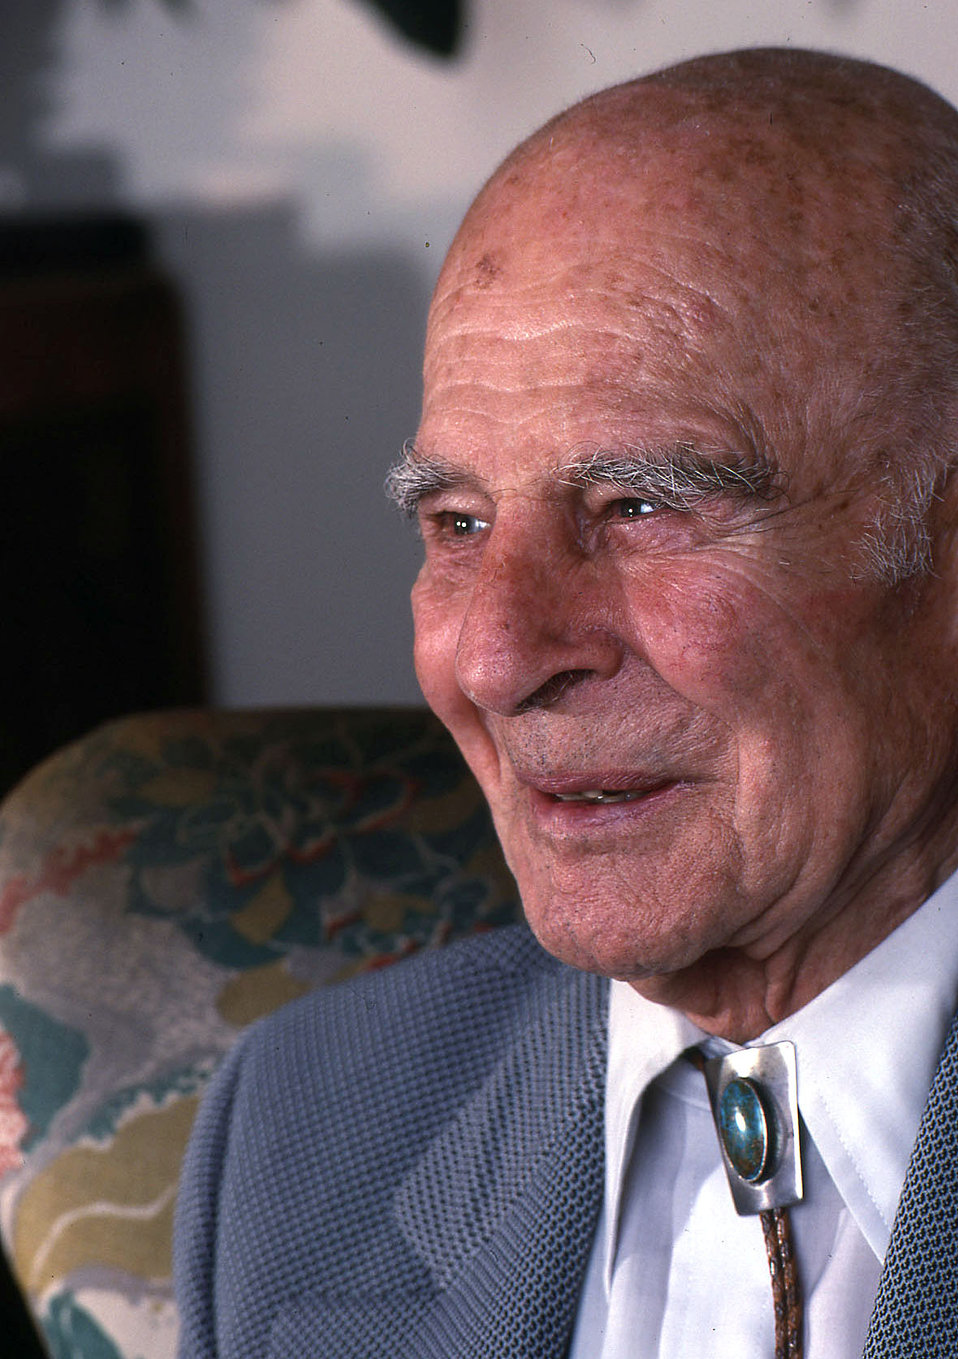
Gen. Jimmy Doolittle tells his story in an interview with Airman magazine in 1986.